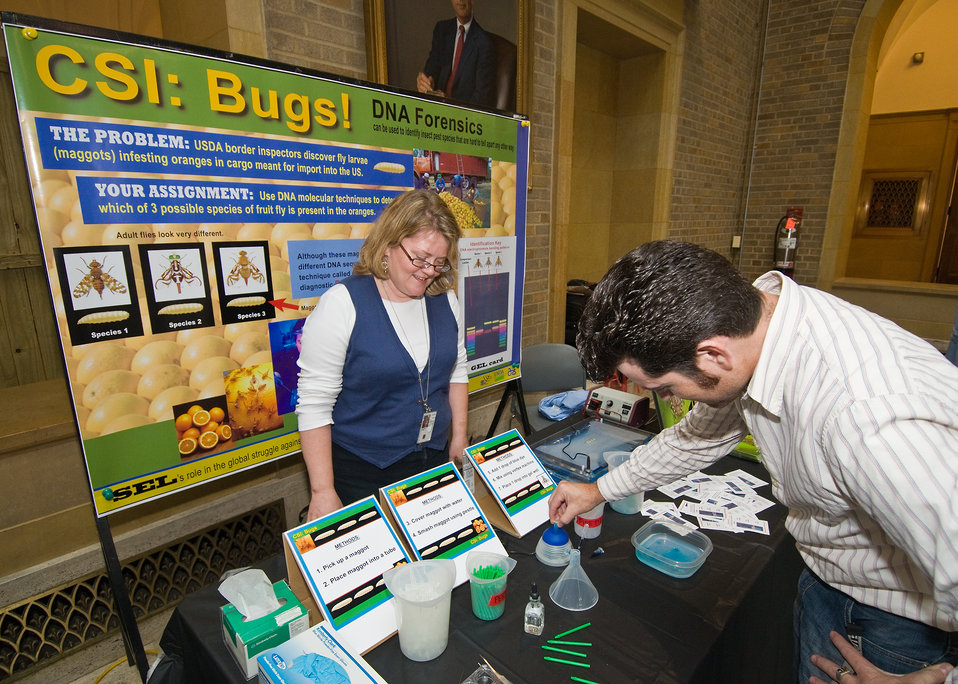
Sonja Scheffer, Molecular Biologist (left), Invasive Insect Biocontrol and Behavior Laboratory, Beltsville Agricultural Research Center located in Beltsville, Maryland watches as Matt Buffington (right) mixes a solution from insect larvae to determine the DNA of the insect to identify the species of the insect. Invasive Insect Biocontrol and Behavior Laboratory set up the protocol for insects that are hard to identify. The protocol is the first line of defense against invasive insect species and mice. The labs exhibit was part of the, 'Celebrating Science Bed Bugs...Chocolate...and Beyond' event held at the United States Department of Agriculture in Washington, DC, on Monday, October 4, 2010. USDA Photo 10di1515-64 by Bob Nichols.